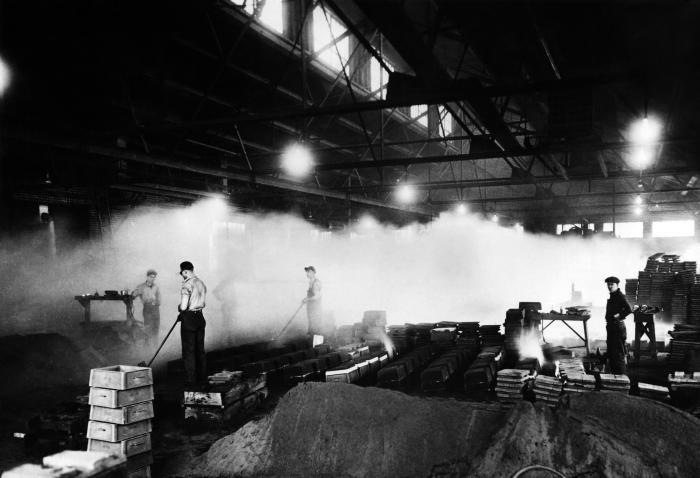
This historical photograph was provided by the Center for Disease Control's (CDC), National Institute for Occupational Safety and Health (NIOSH). The image depicted a number of men working in a foundry processing molten metal. This view revealed the visibly-poor quality of the air before 'exhausting,' or prior to ventilating. In the enclosed building the indoor air pollutants given off as a result of the smelting process were what gave the indoor environment its smokey appearance.